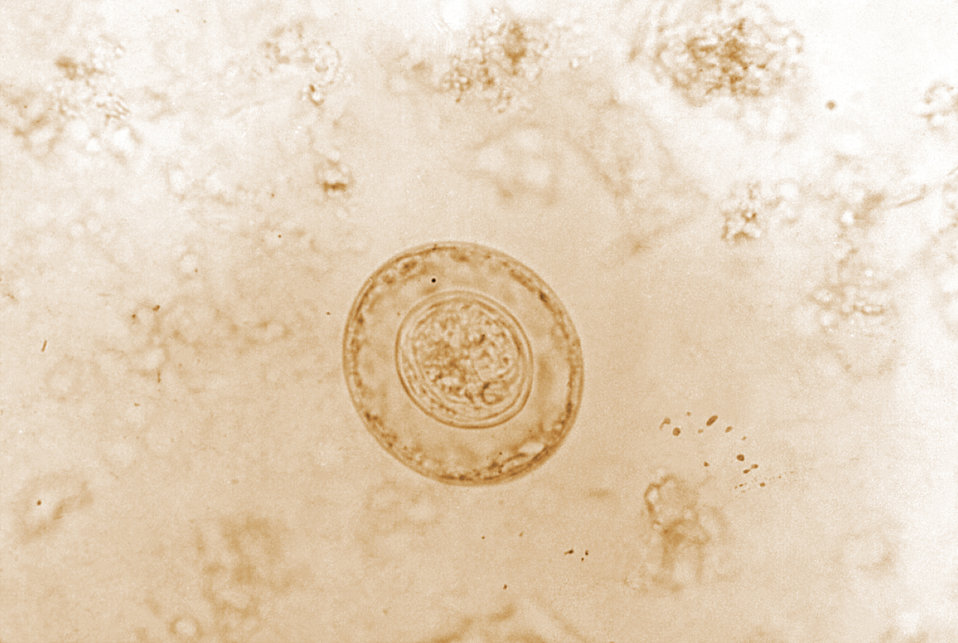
This photomicrograph depicts the egg of a rat tapeworm, Hymenolepis diminuta, during its diagnostic stage. H. diminuta is a cestode frequently found in rodents, and infrequently seen in humans. See PHIL 3395 for a diagrammatic representation of this tapeworm's lifecycle.